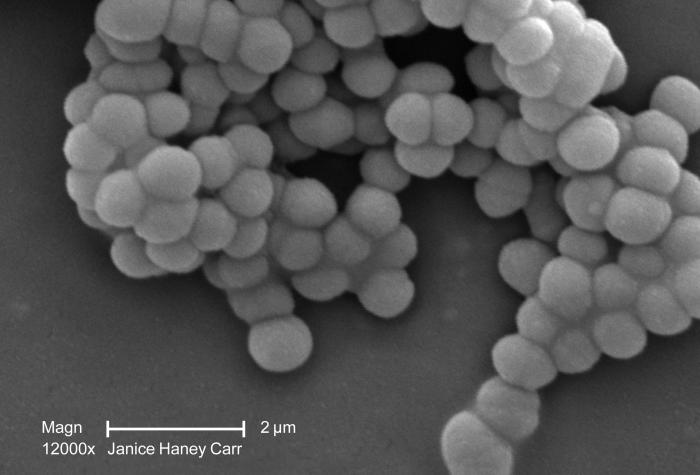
Under a moderately-high magnification of 12,000X, this scanning electron micrograph (SEM) revealed a cluster of Gram-positive, beta-hemolytic Group C Streptococcus sp. bacteria.